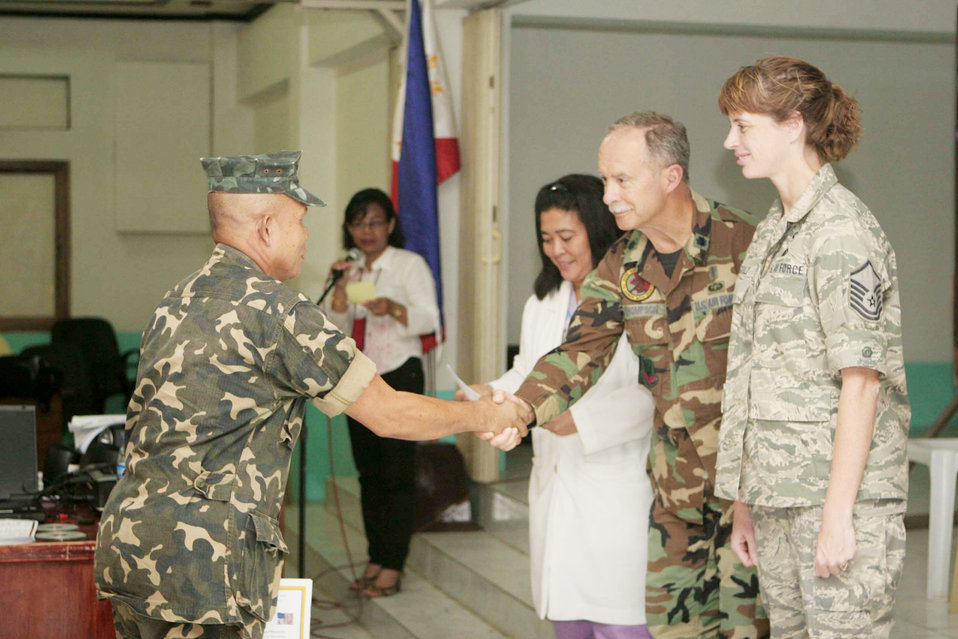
Medics teach mental health classes in Philippines

Joint Special Operations Task Force-Philippines Chaplain Col. Steven Thompson hands out a graduation certificate to an attendee at a three-day psychosocial combat stress class taught Nov. 18, 2009, at Camp Navarro General Hospital at Western Mindanao Command in Zamboanga, Philippines. Taught jointly by the hospital's psychologist and members of the JSOTF-P Command chaplain teams, the class focused on treatments for victims of wars and man-made disasters.